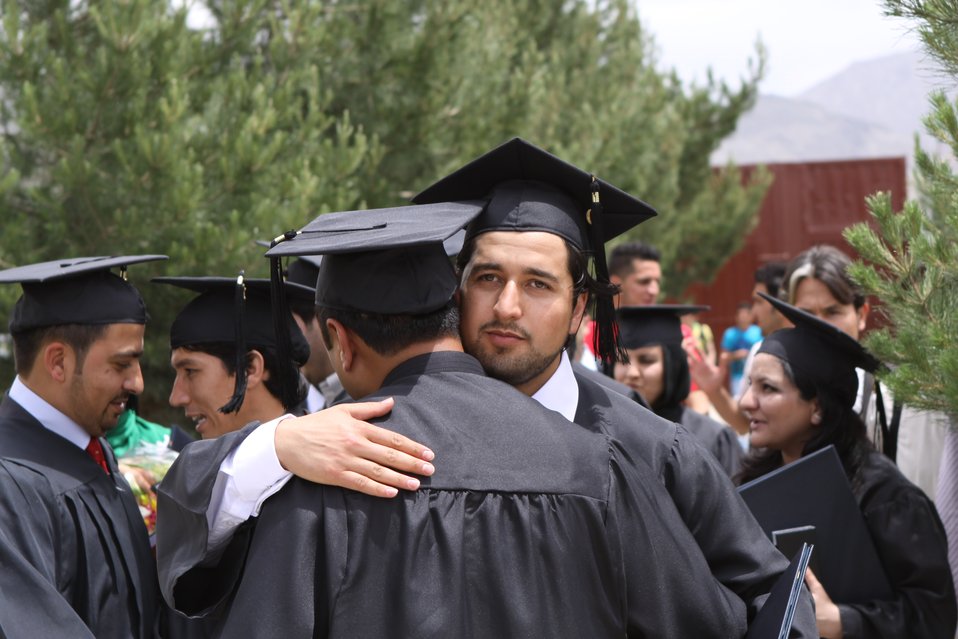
100526 AUAF Graduation 337